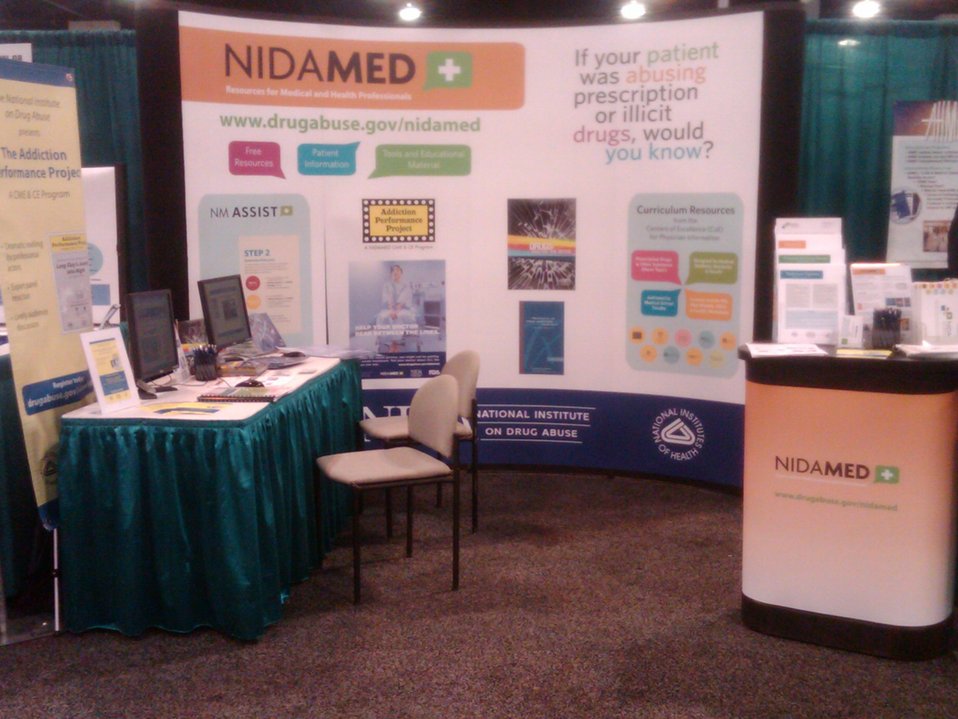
NIDAMED Launch